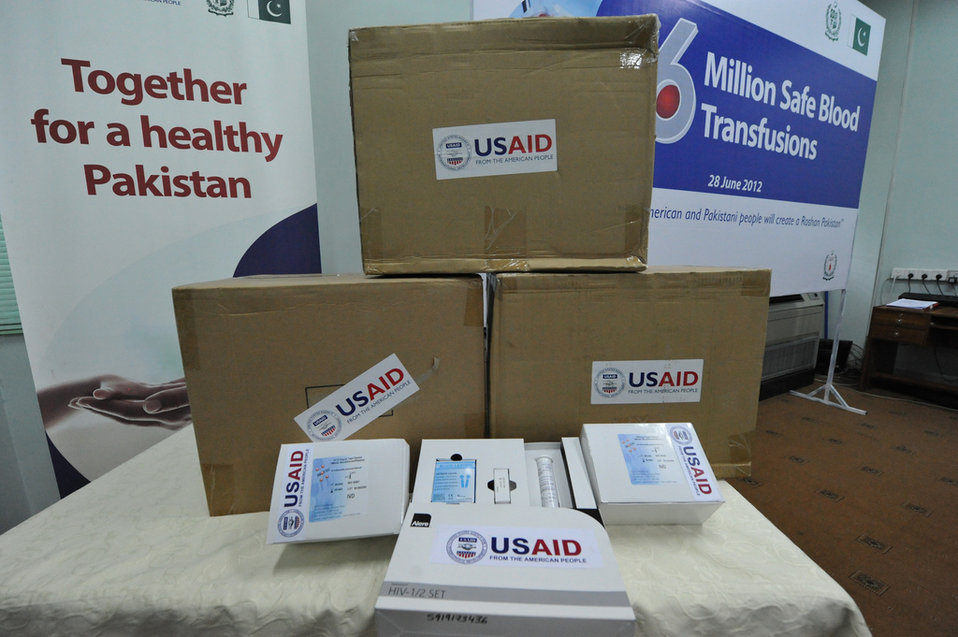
U.S. strengthens Pakistan’s ability to deliver quality health care

The U.S. Government has donated a two-year supply of blood safety kits to the Government of Pakistan to support Pakistan’s National Blood Transfusion Program. The 115,000 kits were presented by Ms. Karen Freeman, Acting Country Director for the U.S. Agency for International Development (USAID) to Mr. Imtiaz Inayat Ilhahi, Secretary of Capital Administration and Development Pakistan, today at the Pakistan Institute for Medical Sciences (PIMS).